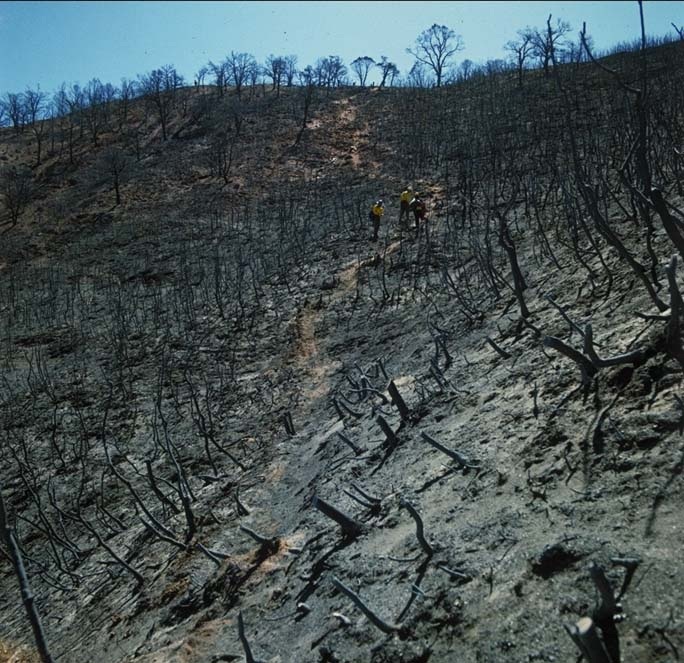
Burned area